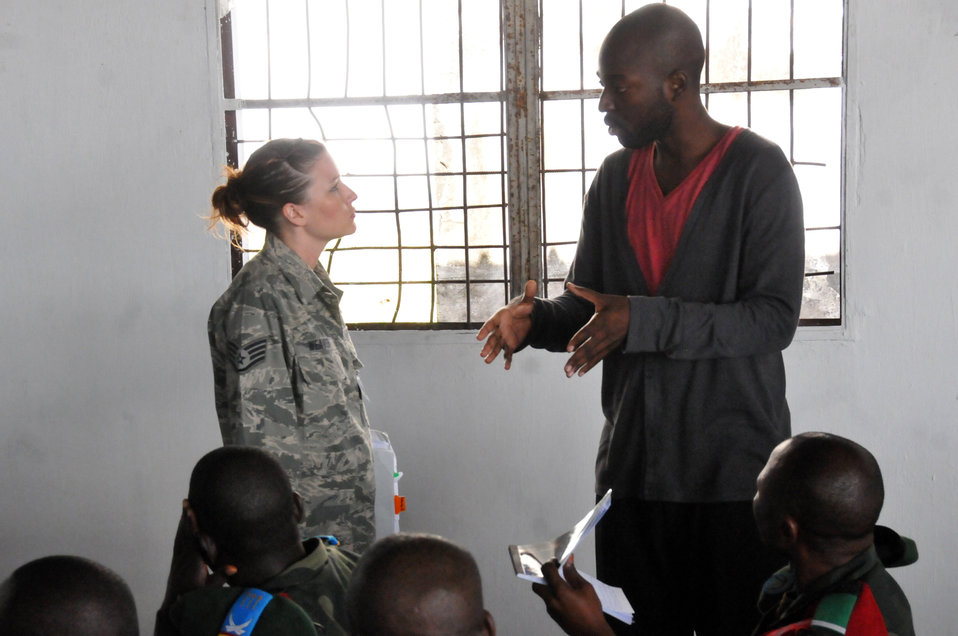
U.S. service members, FARDC make final push to exercise finale

KINSHASA, Democratic Republic of the Congo ? Air Force Staff Sgt. Amber Weaver, an aeromedical evacuation technician with the Wyoming Air National Guard's 187th Aeromedical Evacuation Squadron, conducts training to members of the Democratic Republic of the Congo?s armed forces (FARDC) quick response force (UMIR), about aircraft capabilities of the C-130 Hercules during MEDLITE 11, May 2, 2011.